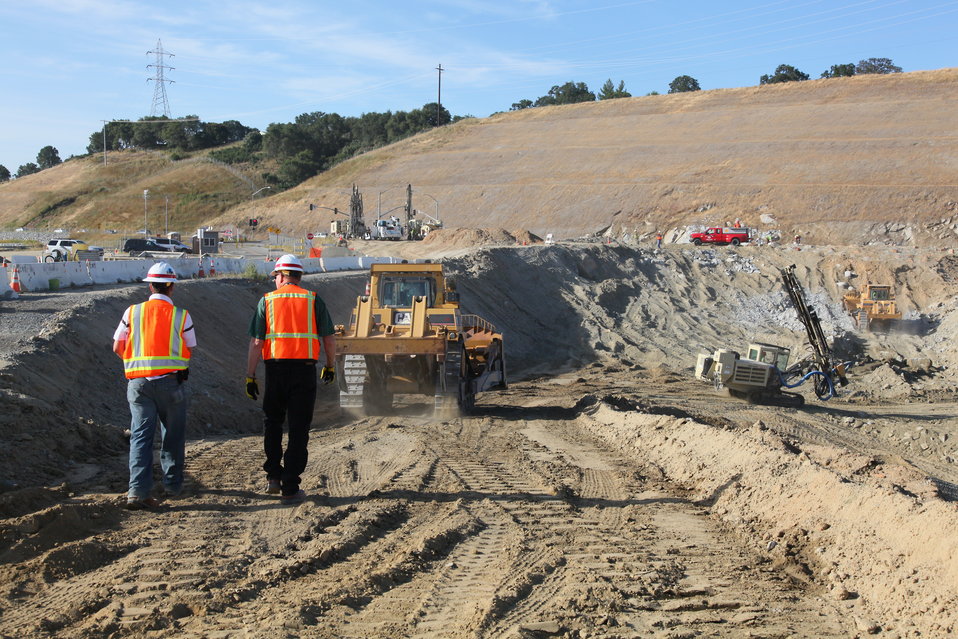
Excavating Folsom Dam’s auxiliary spillway

Excavation of the auxiliary spillway at Folsom Dam in Folsom, Calif., continues June 16, 2011. The spillway will let Folsom Dam release water sooner and more safely. The project is part of the Folsom Dam Joint Federal Project, a joint effort of the U.S. Army Corps of Engineers Sacramento District, the U.S. Bureau of Reclamation, the Central Valley Flood Protection Board and the Sacramento Area Flood Control Agency to improve the safety of the dam and reduce flood risk for the greater Sacramento area.